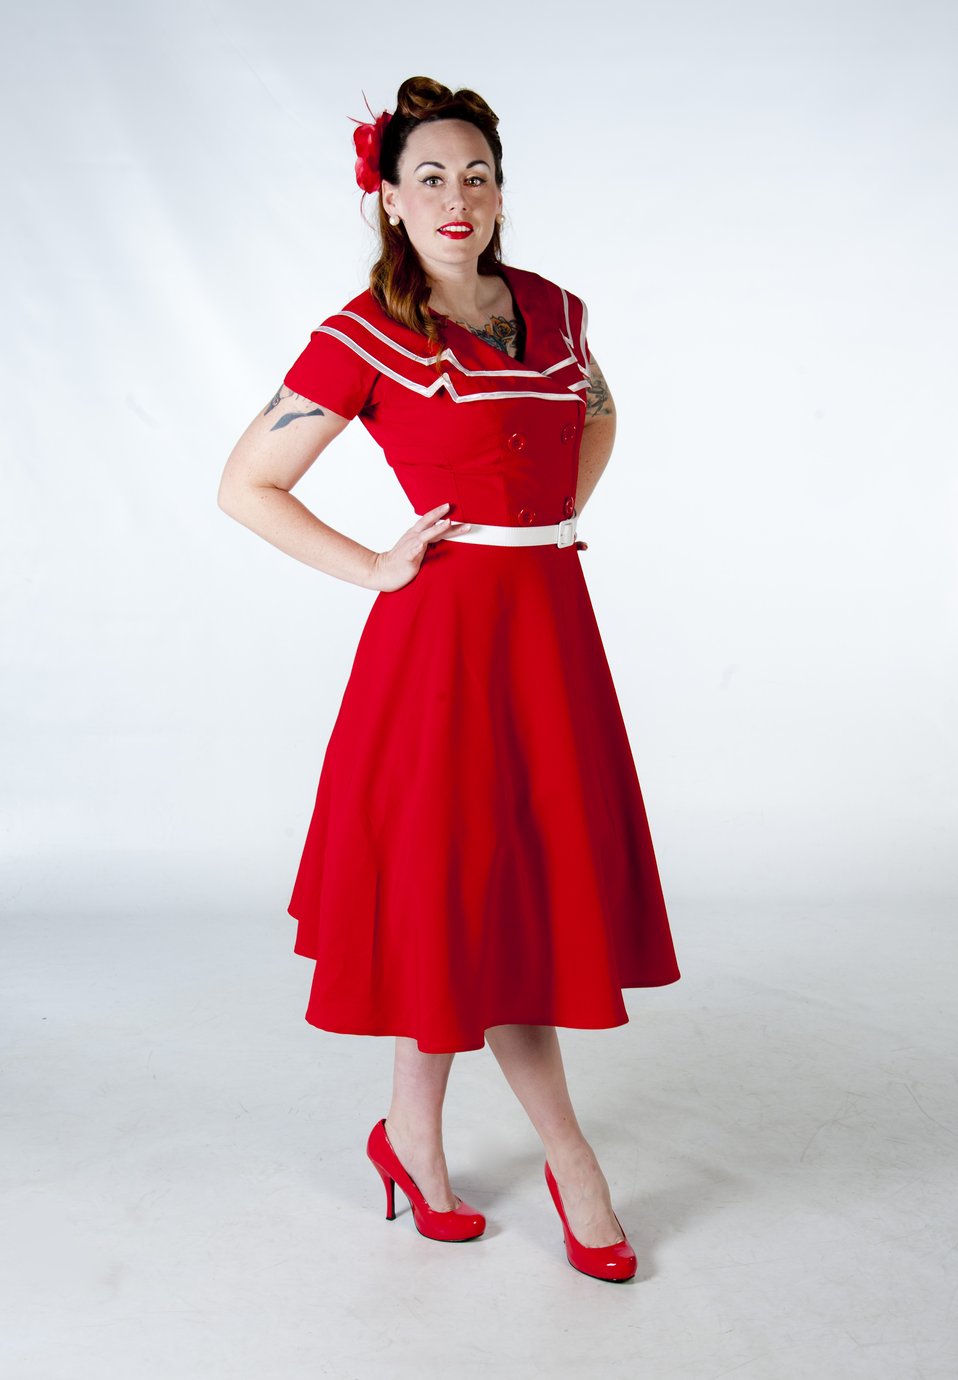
Pin-up for the troops

Staff Sgt. Destini English, 99th Medical Operations Squadron mental health technician, poses as her alter-ego, Jaynee Lou Jeepers, during a photo shoot at Nellis Air Force Base, Nev., Aug. 17, 2012. English is involved with charity organizations, such as Pin-Ups for Vets and Tragedy Assistance Program for Survivors.